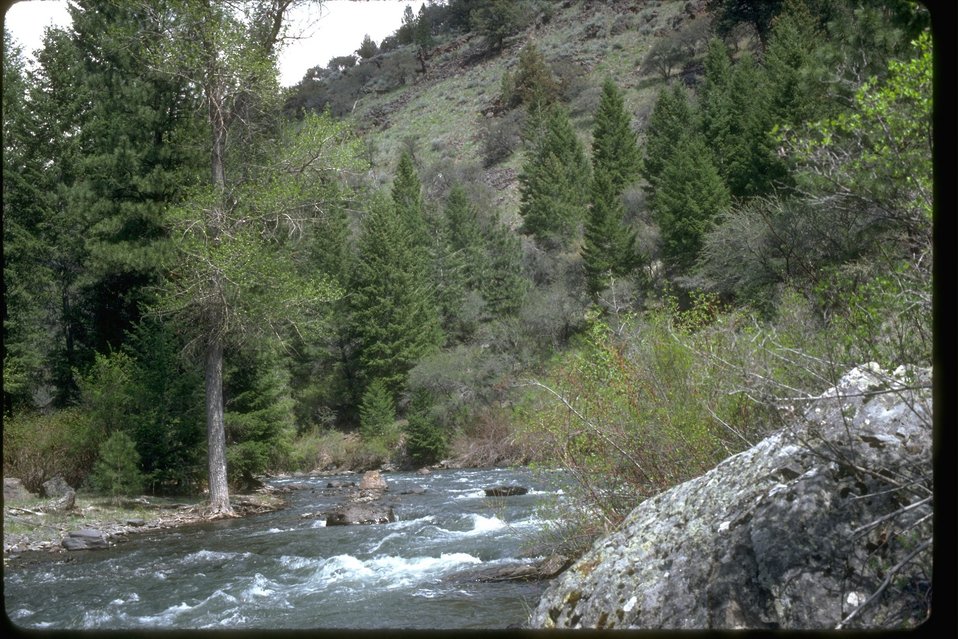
The Malheur River in the Malheur River-Bluebucket Creek Wilderness Study area. OR 2-14